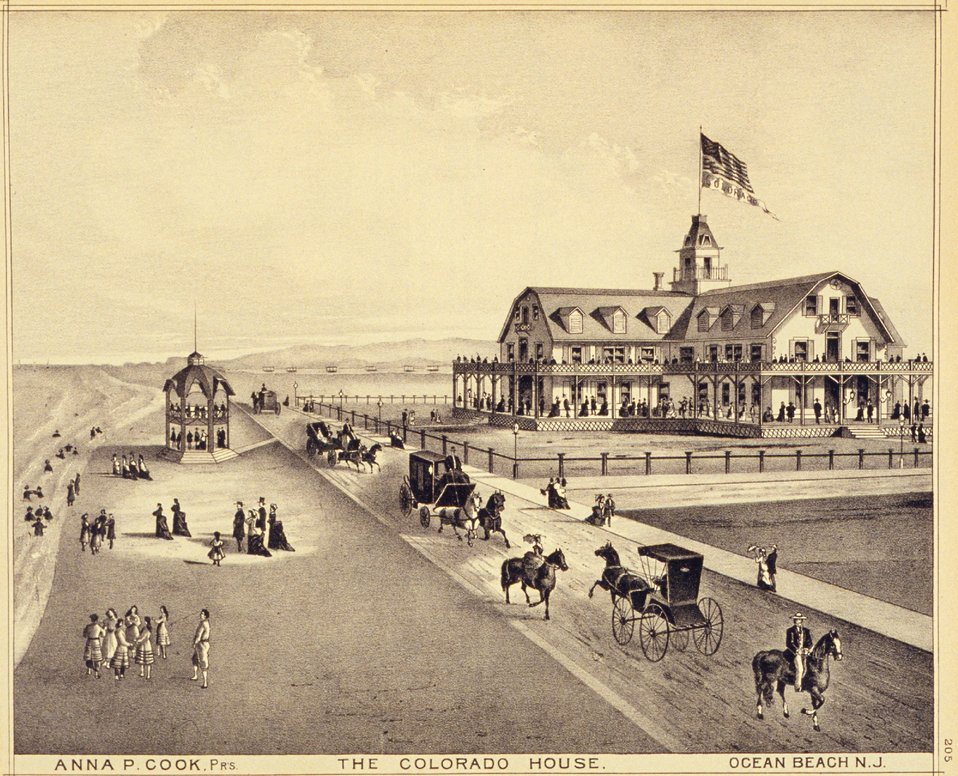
Colorado House, Ocean Beach, New Jersey. P. 205. 'Historical and Biographical Atlas of the New Jersey Coast,' by T. F. Rose, 1878.